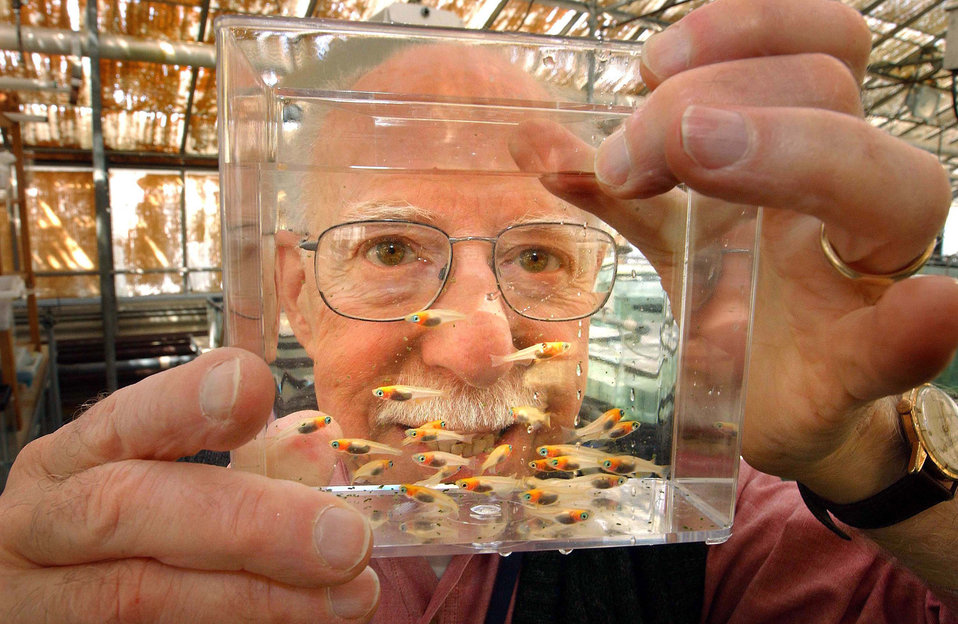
Brookhaven National Laboratory researchers and collaborators have found that malignant melanoma, a deadly form of skin cancer, can be induced by the longer UV-A rays as well as UV-B, and that two visible light wavelengths, violet and blue may act similarly. Their finding in tropical fish susceptible to melanoma were extrapolated to humans, who warned to use proper sunscreen protection.